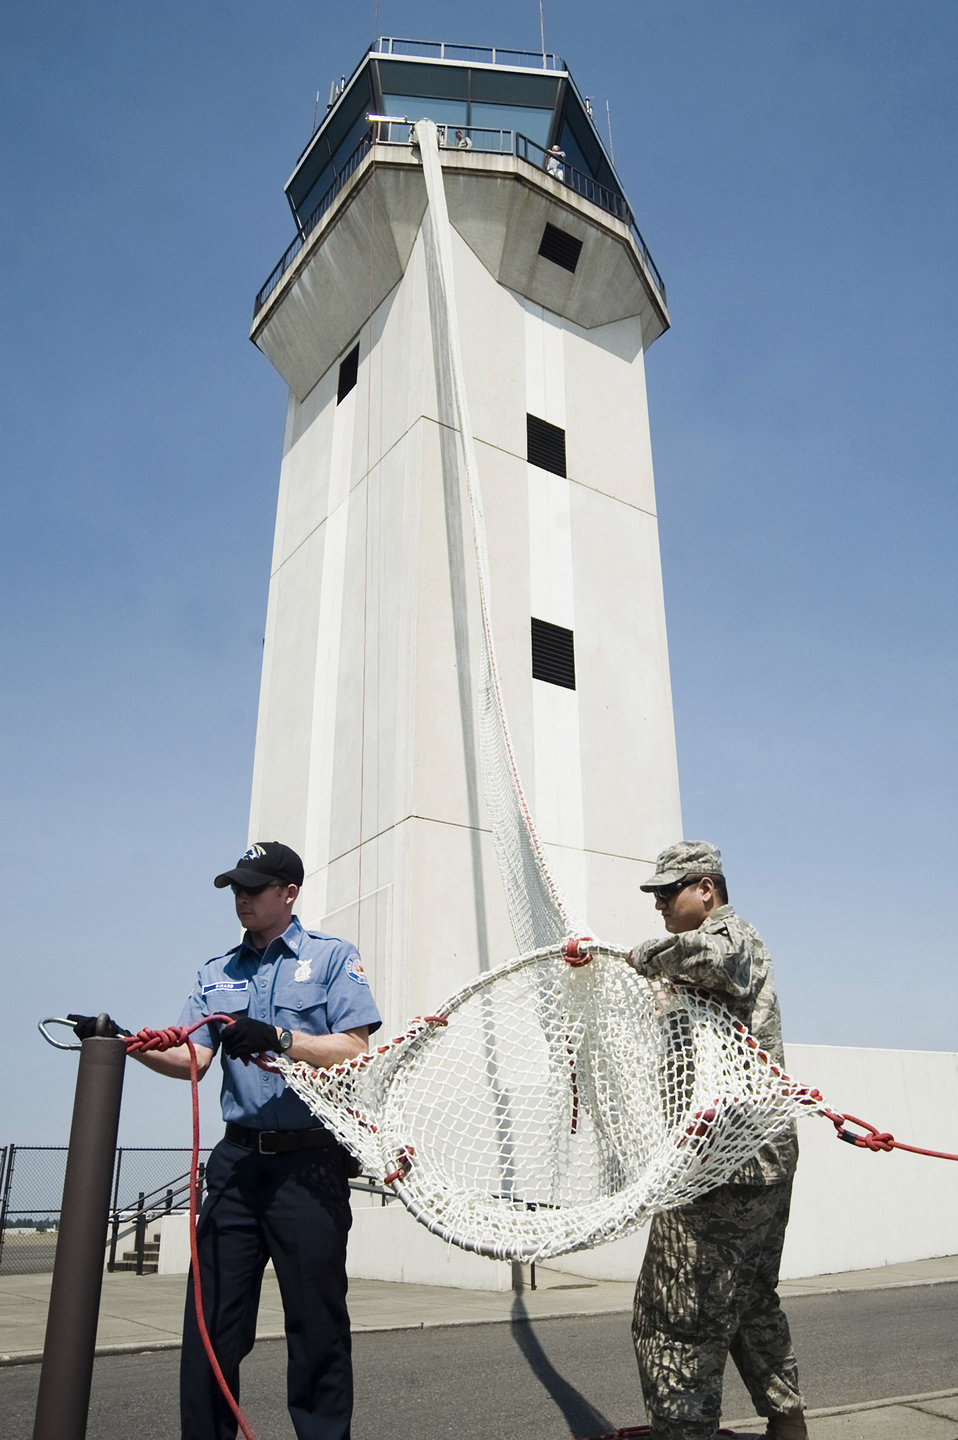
Air traffic controllers practice emergency exit procedures

Staff Sgt. David Rinard (left) and Airman 1st Class Catlin Goodrich secure the Baker Life Chute to stationary poles located at the base of the control tower during evacuation training Aug 3, 2010, at Joint Base Lewis-McChord, Wash. The training familiarizes controllers with a secondary means of escape from the 100-foot structure.